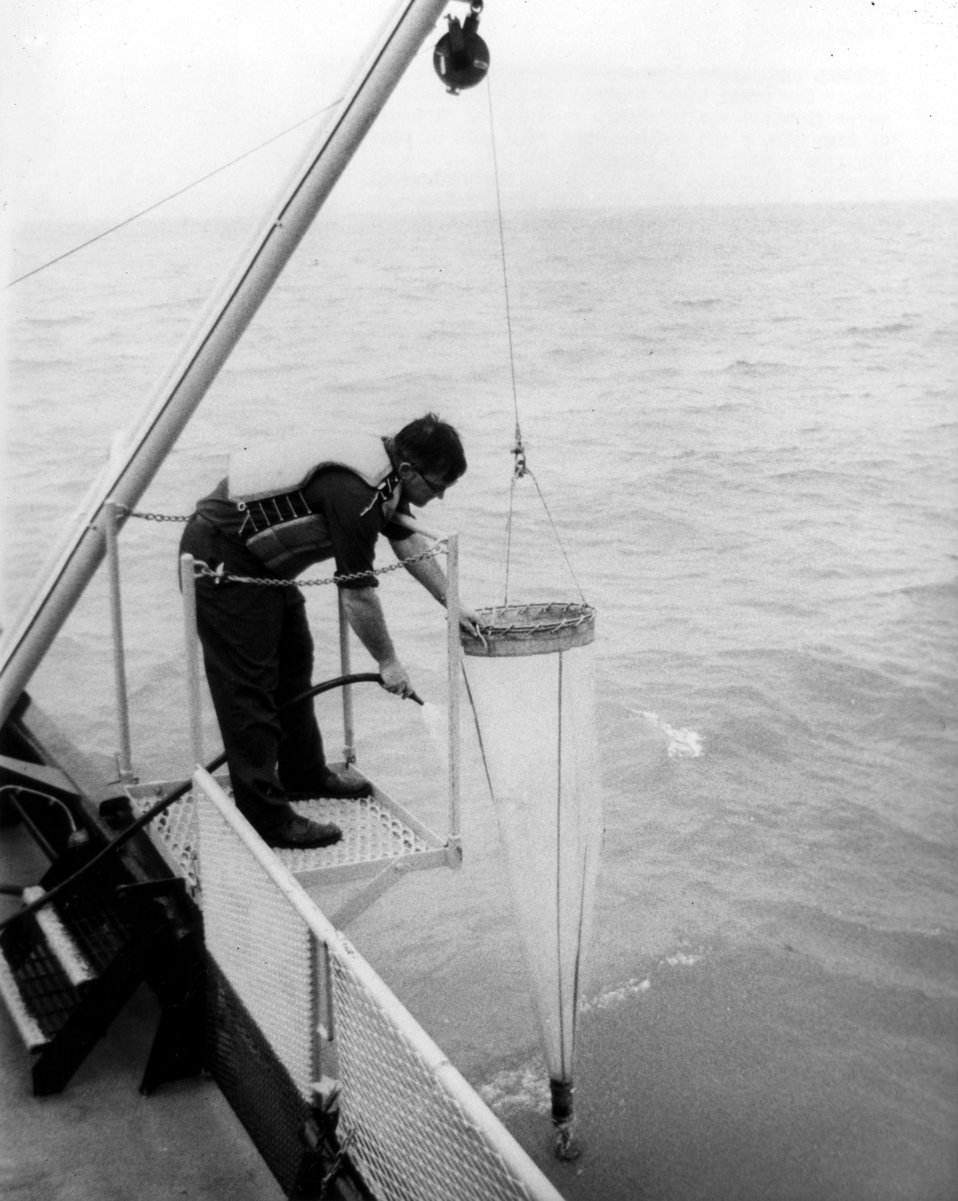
Research specialist from the Center for Great Lakes Studies uses a one-half water plankton meter to obtain a sample of thousands of tiny plants and animals that from part of Lake Michigan's ecological balance.
c.1972